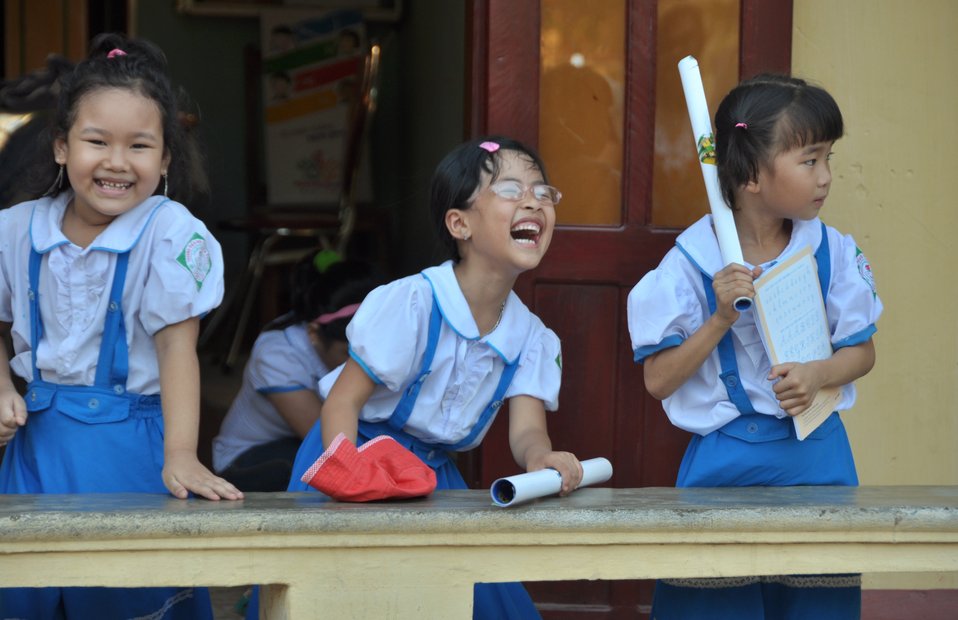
USAID supports deworming education and medication distribution in Bac Giang Province

May 20, 2013